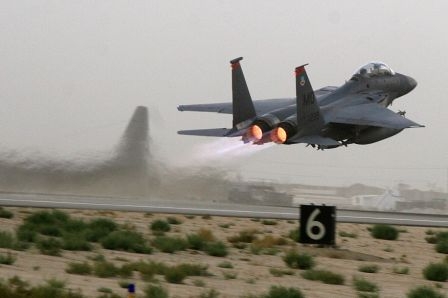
Agility and flexibility: Key components of airpower teamwork

An F-15E Strike Eagle takes off from an air base in Afghanistan. The F-15E is a dual-role fighter designed to perform air-to-air and air-to-ground missions. An array of avionics and electronics systems gives the F-15E the capability to fight at low altitude, day or night, and in all weather.